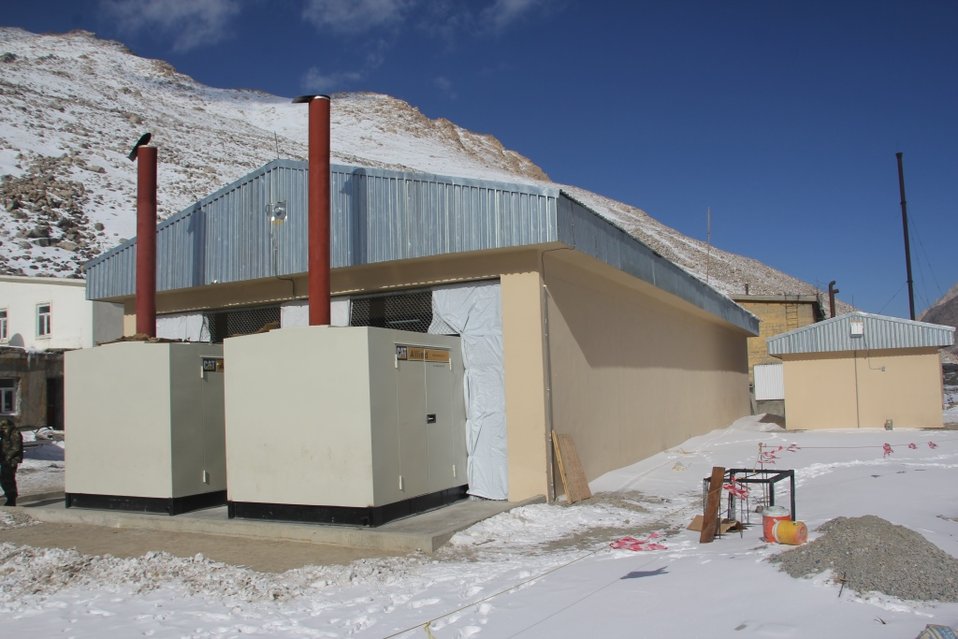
Generator building just outside the Salang tunnel (November 26, 2013)